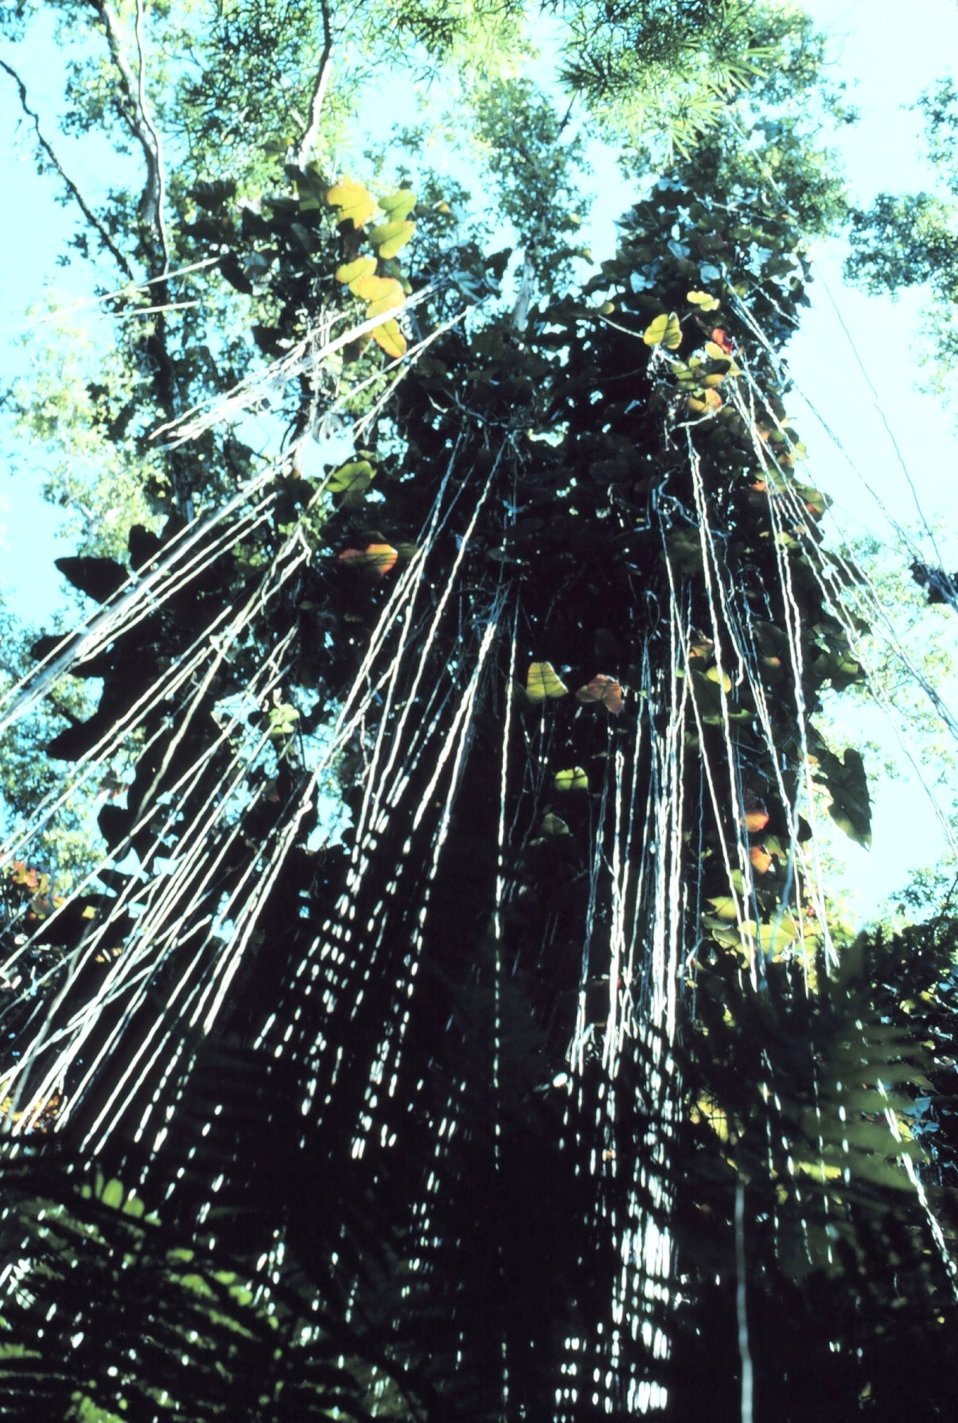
Jungle vines on the edge of the trail to Akaka Falls